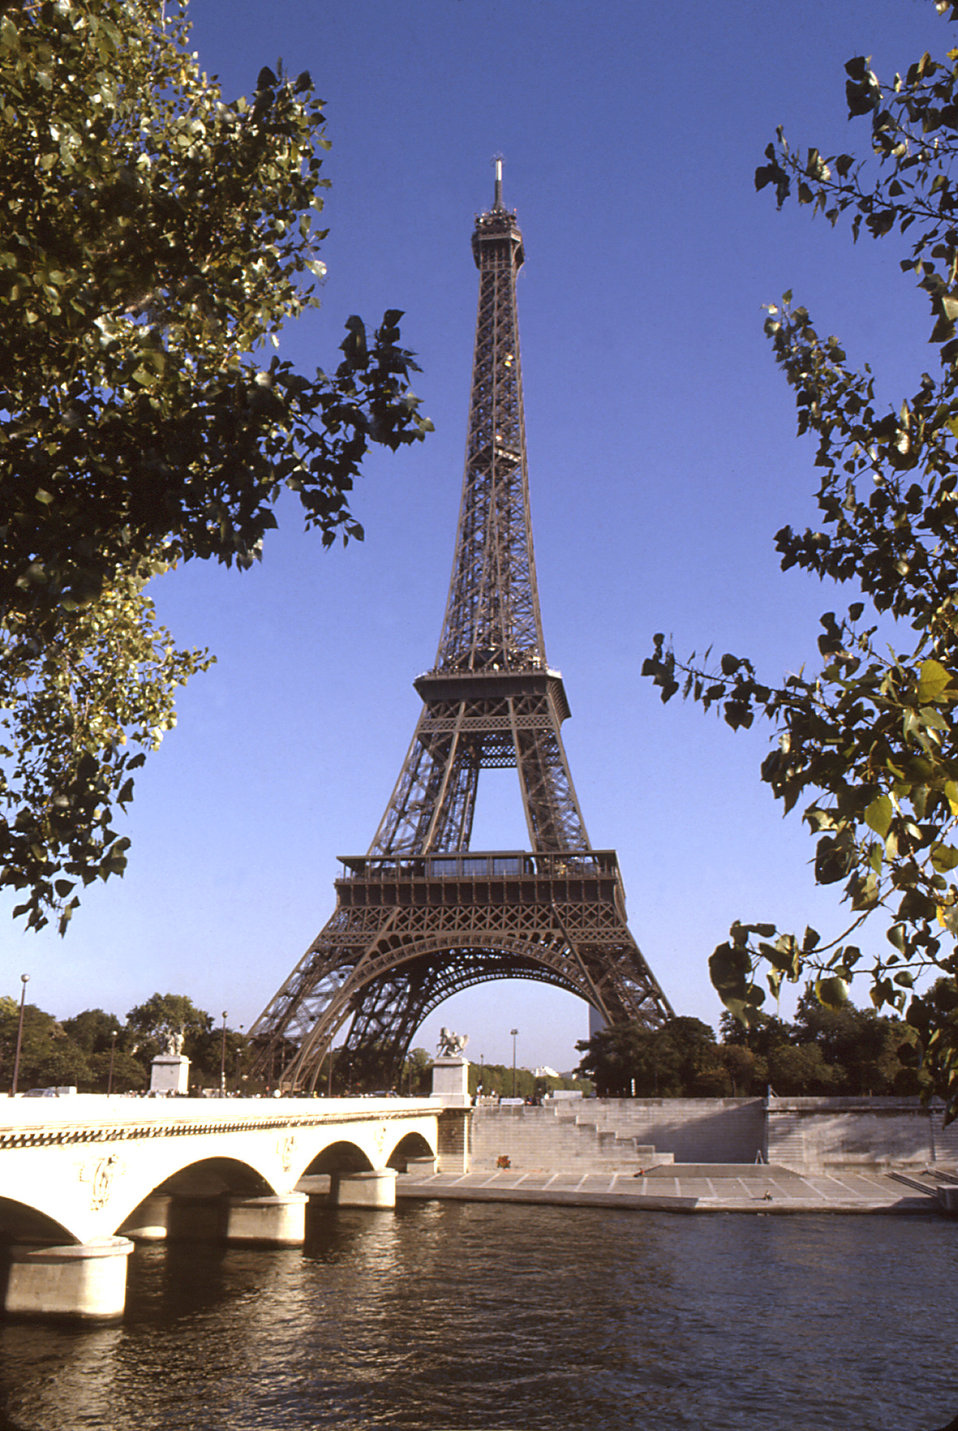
The Eiffel Tower in Paris, France

This photograph depicts the Eiffel Tower in Paris, France. Completed in 1889 after little more than two years' effort, the tower stood 324 meters high, and is the tallest structure within the Paris city limits. More than 200 million people are believed to have visited the tower since its construction. Surveys taken in 1996 indicated that for citizens living in industrialized countries, the Eiffel Tower was the most widely recognized monument in Europe. Paris is a major international tourist destination.